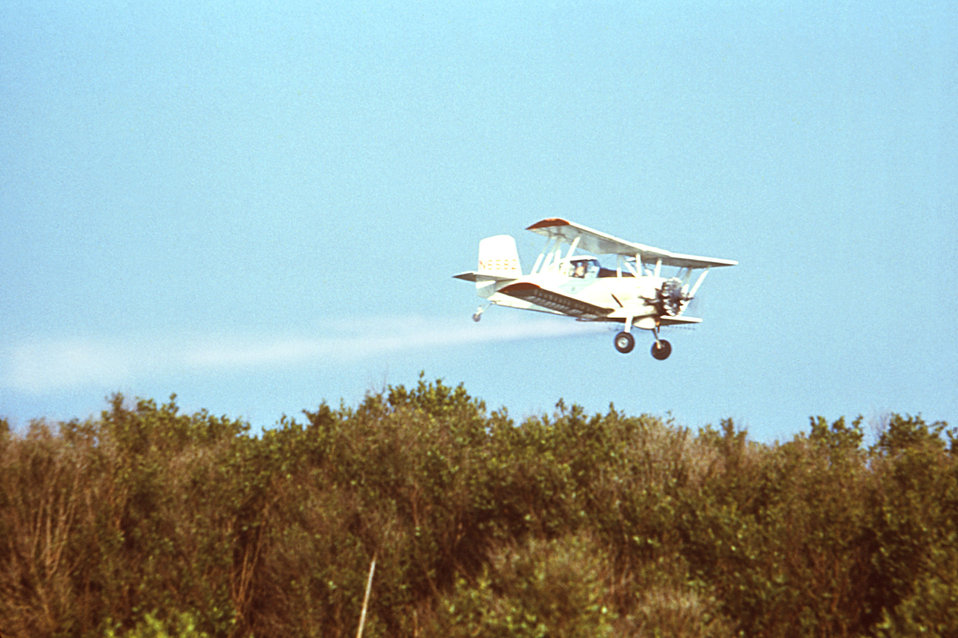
This photograph depicts a Grumman AgCat aircraft that had been outfitted with an insecticidal spray mechanism, enabling it to deposit insecticides atop agricultural crops.